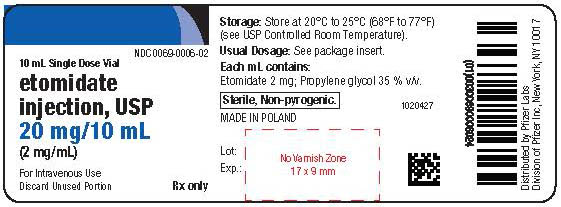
RECALLED – Etomidate Injection, 2mg/mL

February 19, 2014 – Product Recall – Agila Specialties Private Limited Initiates Voluntary Nationwide Recall of 10 Lots of Etomidate Injection 2 mg/mL – 10 mL and 20 mL due to the Presence of Particulate Matter and/or Illegible and Missing Lot Number and/or Expiry Date.